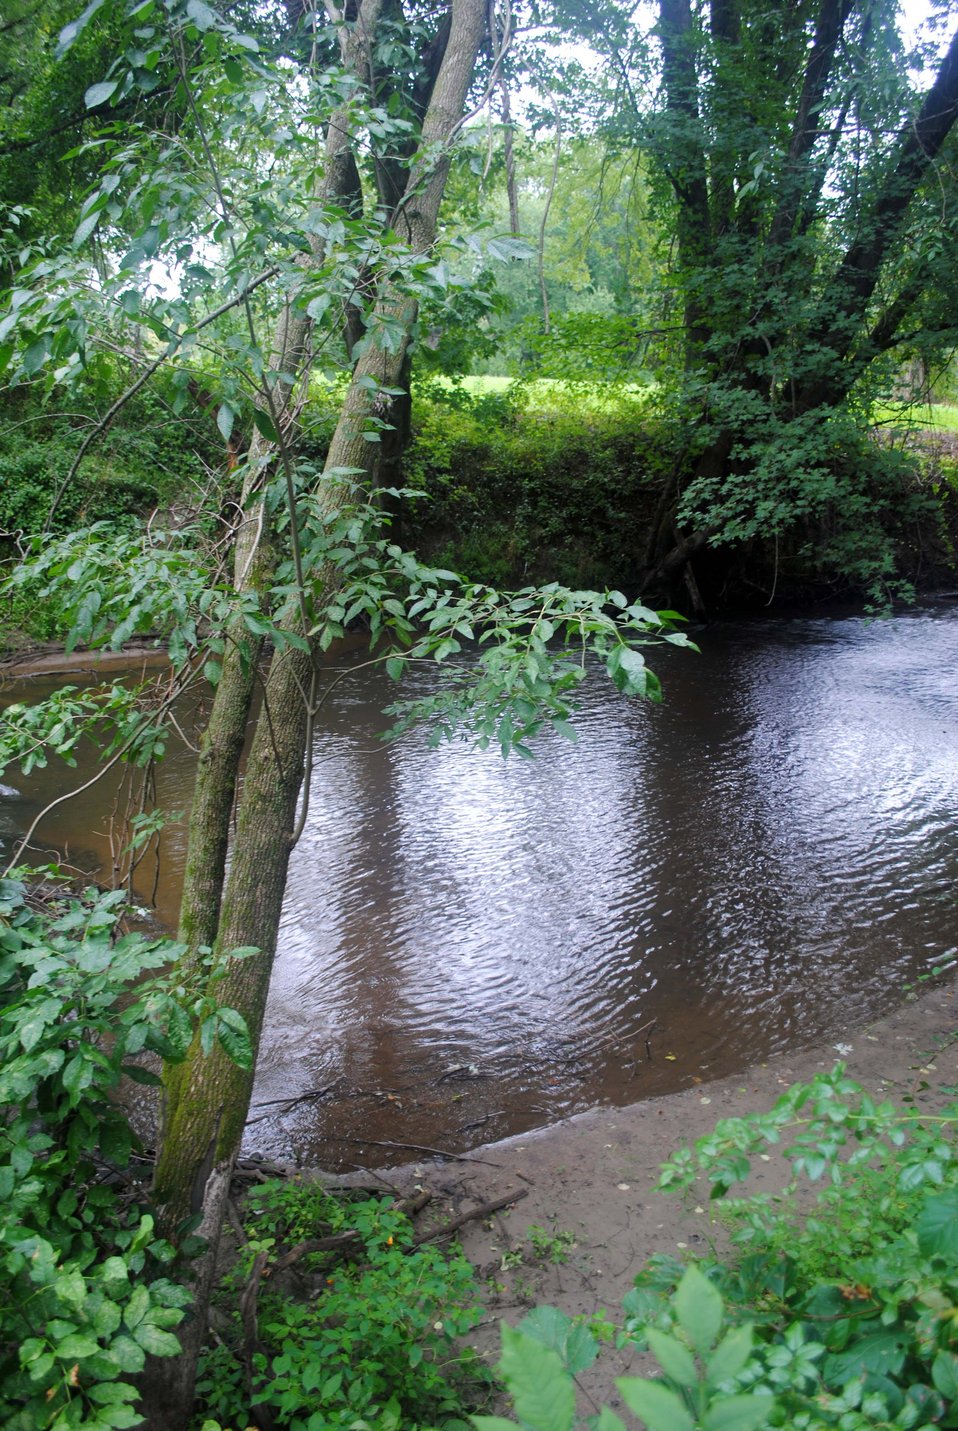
Fort River Division of the Silvio O. Conte National Wildlife Refuge, Hadley, MA.